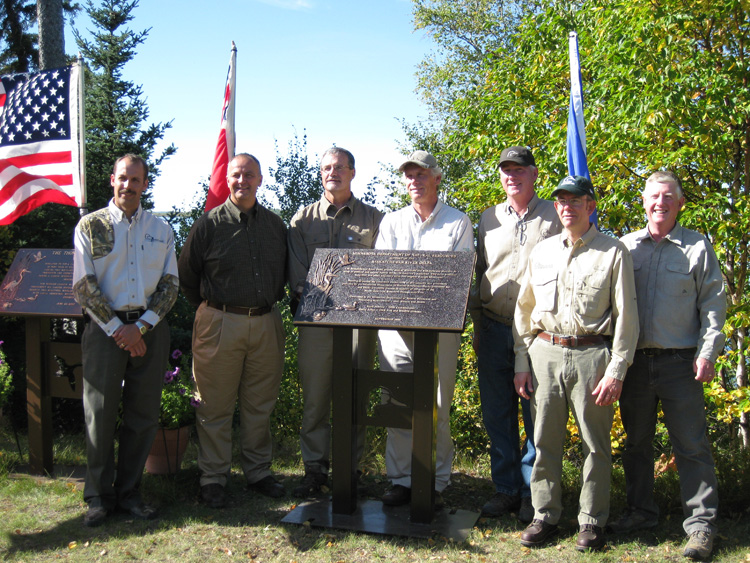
partners